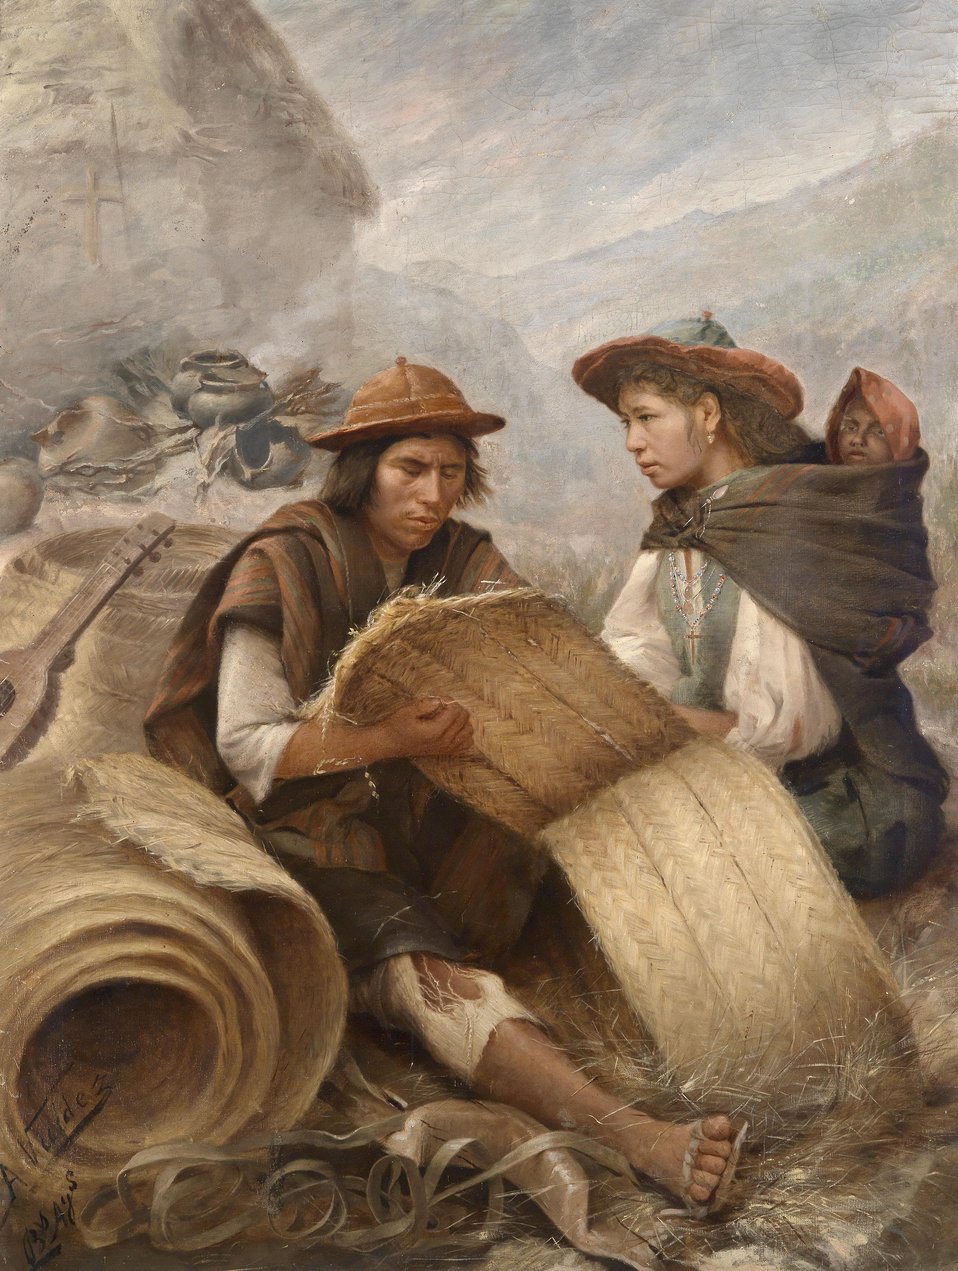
A Valdez Quechua-Indianer in den Anden